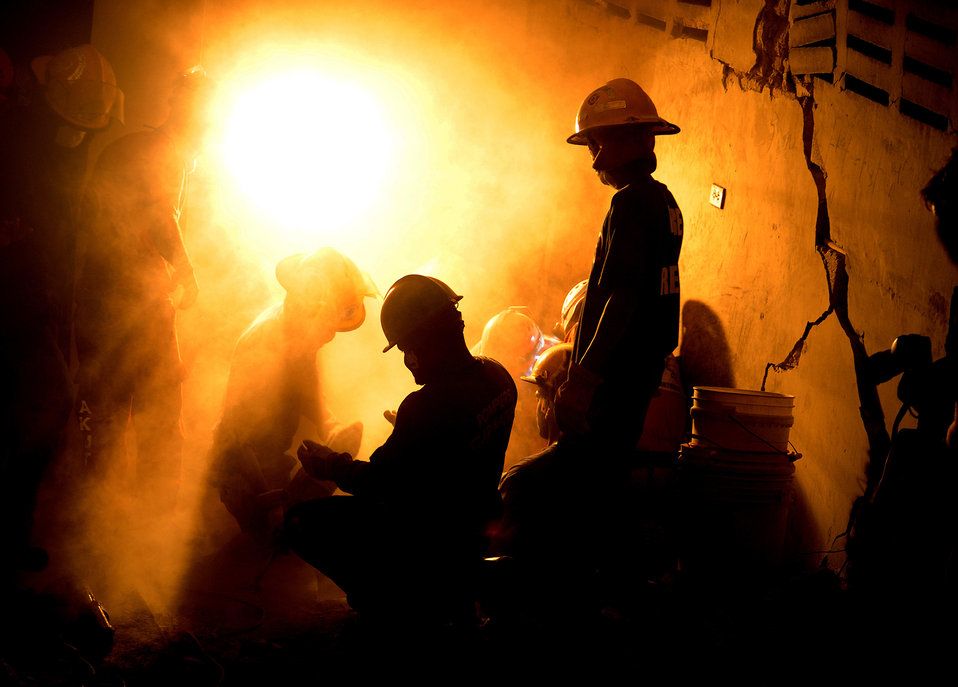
A ray of hope

Members of various rescue teams work Jan. 19, 2010, to free a 25-year-old woman who had been trapped in a collapsed building for seven days in Port-au-Prince, Haiti.